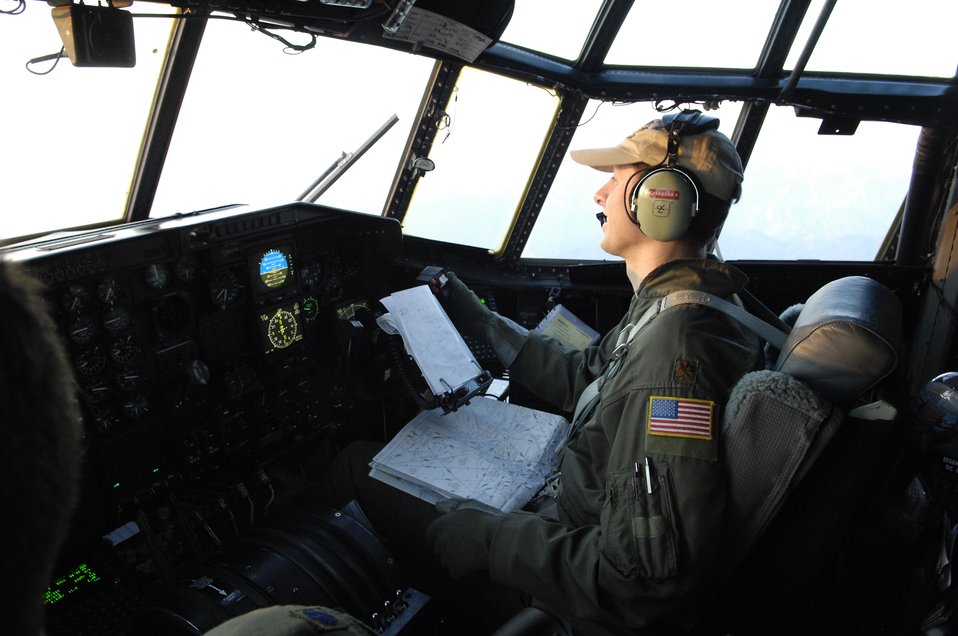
C-130s fight California wildfires

Maj. Robert Fairbanks is part of the C-130 Hercules aircrew deploying 3,000 gallons of fire retardant over the Poomacha fire Oct. 24 in North San Diego County, Calif. The C-130 and crew are assigned to the 302nd Airlift Wing from Peterson Air Force Base, Colo. The aircraft launched from Channel Islands Air National Guard Station, Calif. Air Force Reserve Command officials sent two of its designated firefighting C-130H3 aircraft to help battle the raging wildfires in Southern California.